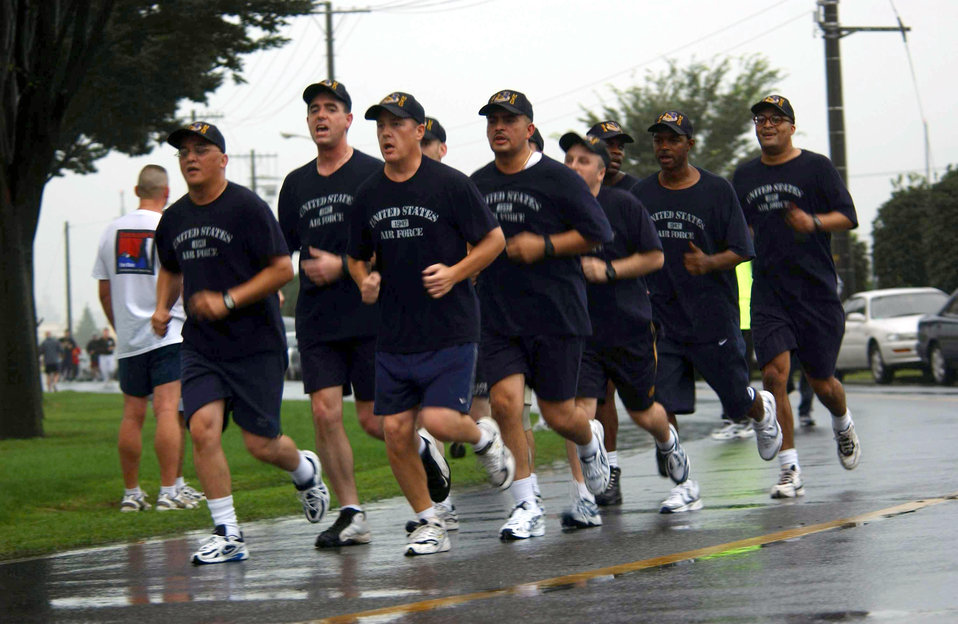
Finish line ahead

YOKOTA AIR BASE, Japan -- Airmen from the 374th Maintenance Operations Squadron here head for the finish line during a 5K run. Officials at the 374th Medical Group are helping airmen prepare for the upcoming physical readiness test.